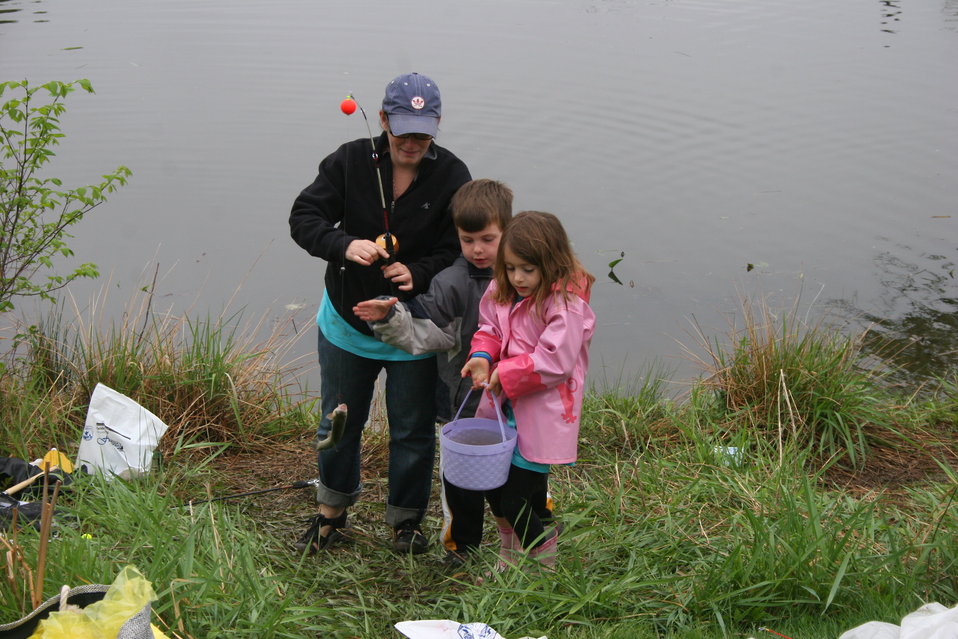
Fishing event at U.S. Fish and Wildlife Service Regional Office in Hadley, MA